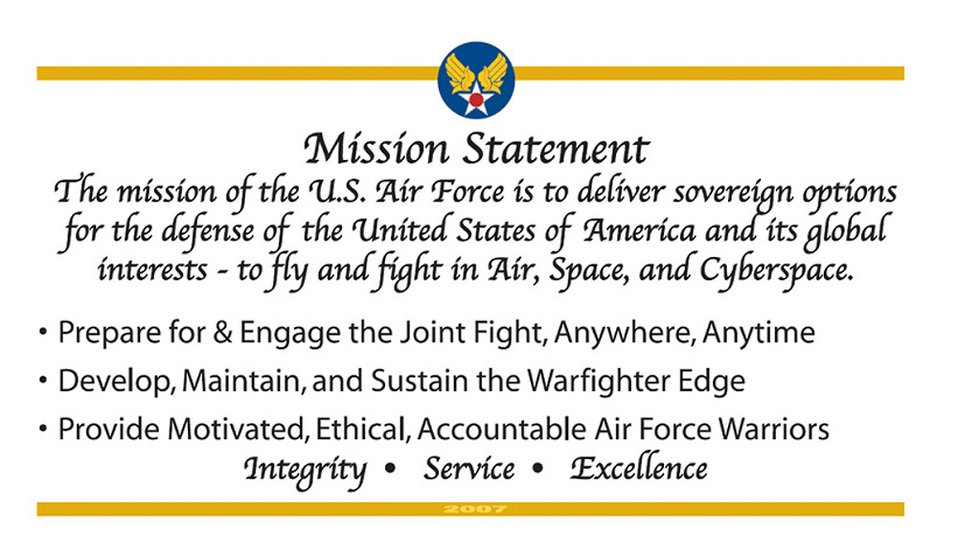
SECAF emphasizes Air Force goals with card

When Secretary of the Air Force Michael W. Wynne spoke at his town hall meeting at the Pentagon earlier this year, he discussed some of the issues facing the Air Force today, as well as its strengths and his goals for 2007. One of the ways he's spreading those goals is through a mission, or